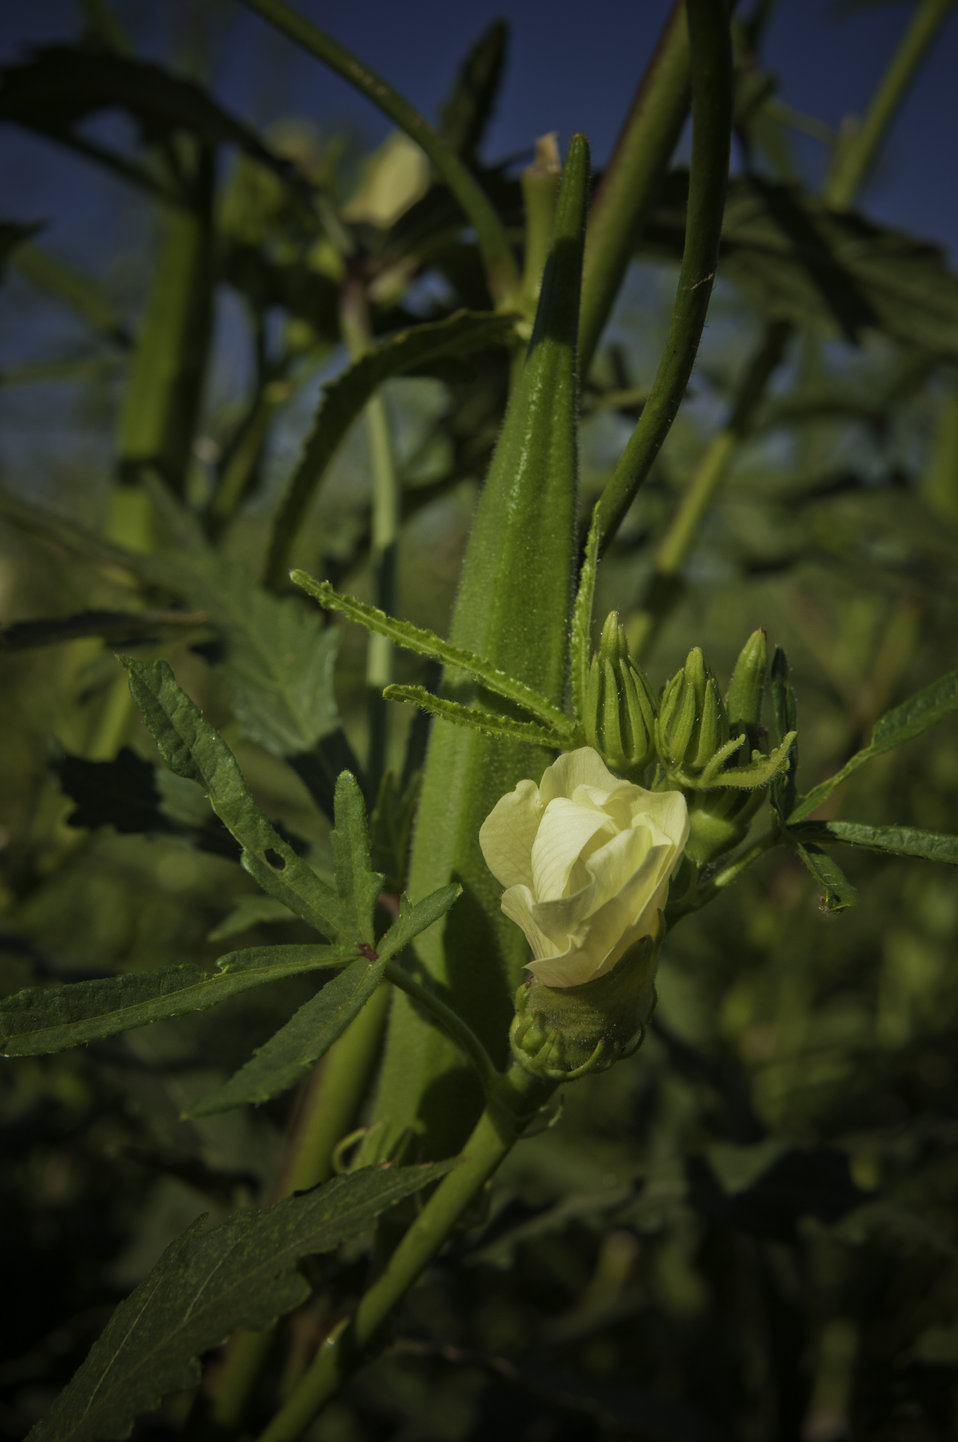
Okra and okra flowers grown on may's Flower's Farm in Sanger, California on Thursday, August 29, 2013.